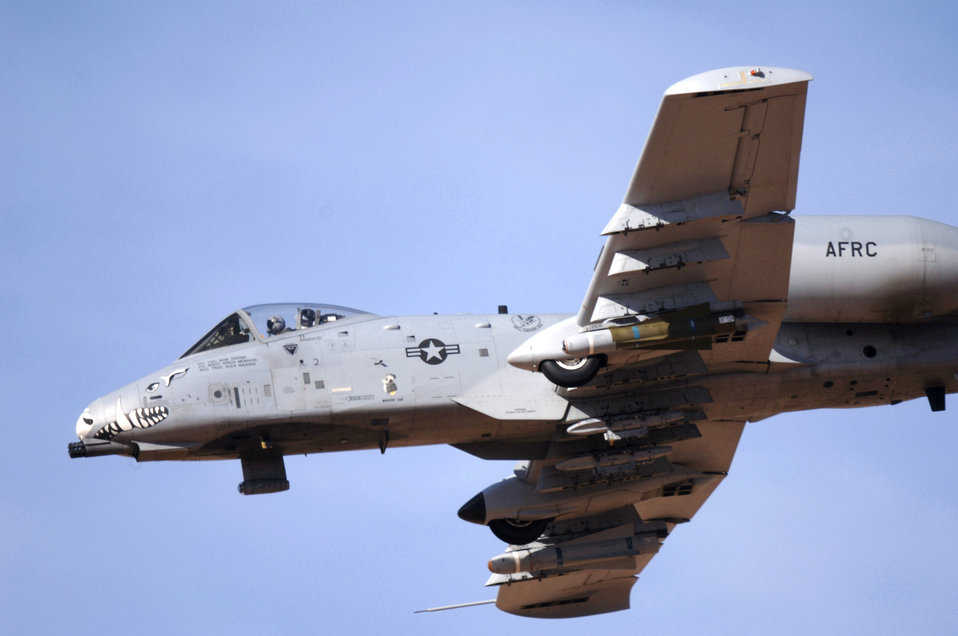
Hawgsmoke

The sleek and powerful A-10 Thunderbolt II speeds passed the control tower Thursday, March 23, 2006 over Davis-Monthan Air Force Base, Ariz., during Hawgsmoke 2006 competition. Spectators watch the ongoing competition between A-10 teams from around the world as they go head to head to be named the best in their field.